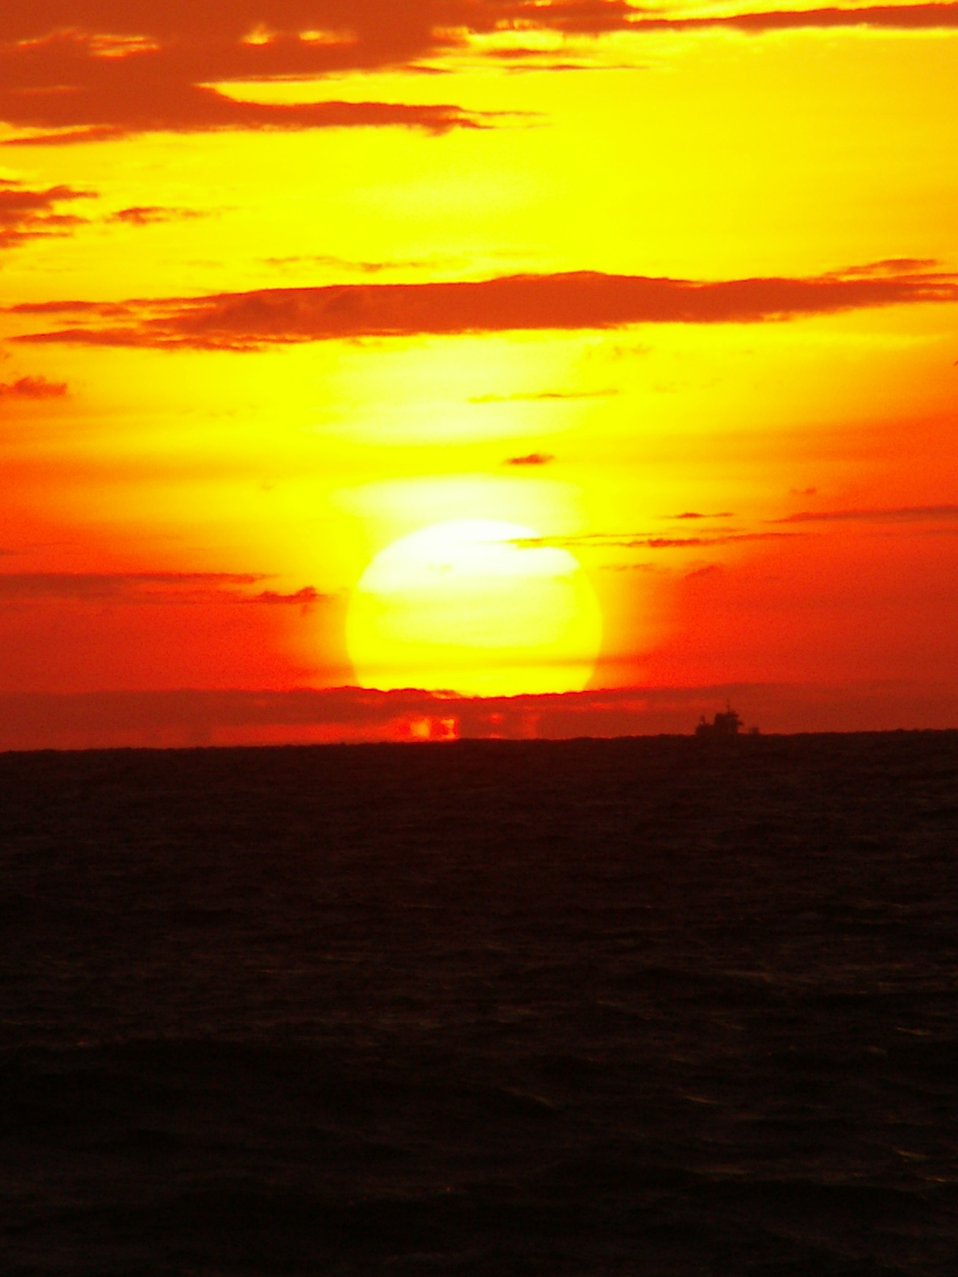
Hobe Sound sunrise with vessel on the horizon.